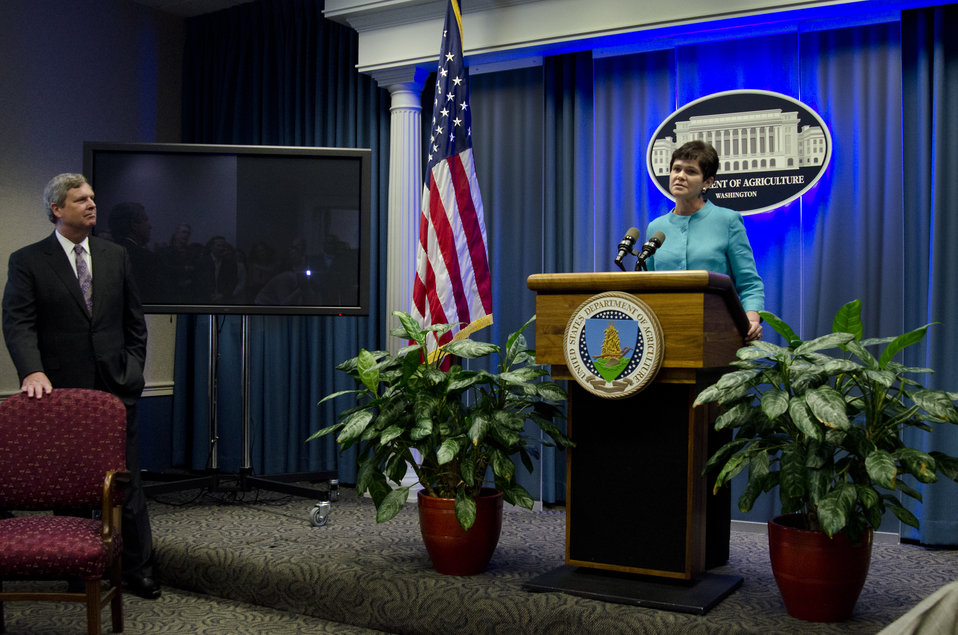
Agriculture Secretary Tom Vilsack listens as Agriculture Deputy Secretary Krysta Harden makes remarks at her swearing in ceremony at the U.S. Department of Agriculture in Washington, D.C. on Monday, Aug. 12, 2013.